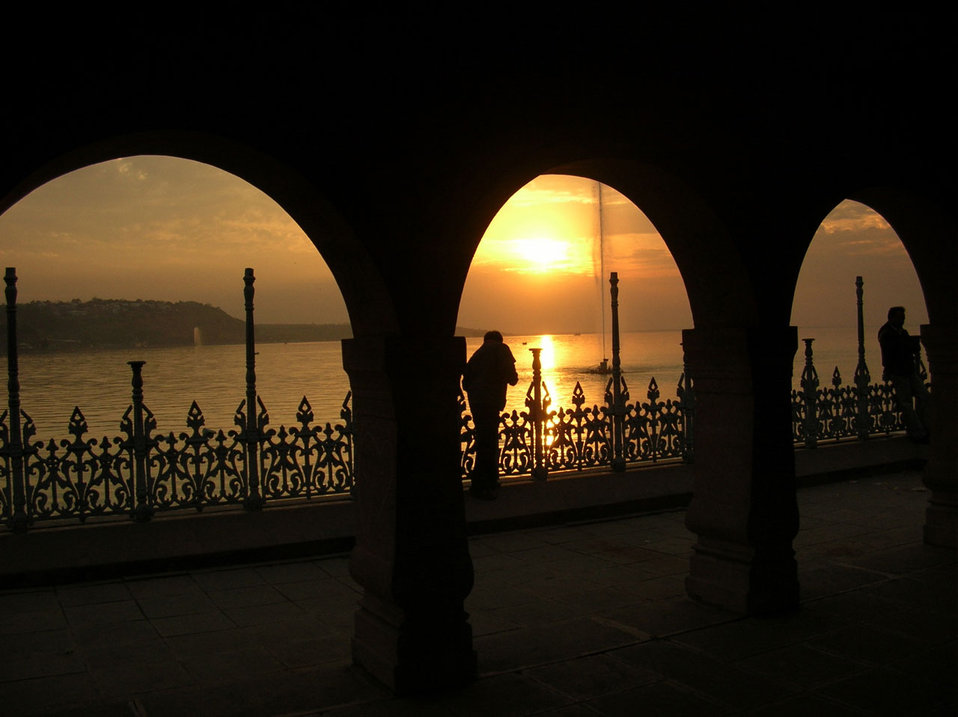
Sunset in the lake

Sunset in the bhopal lake.